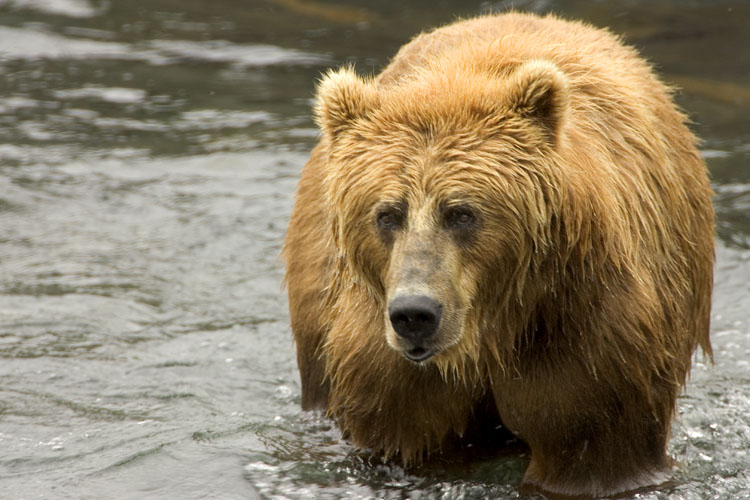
Wildlife of Kodiak Refuge